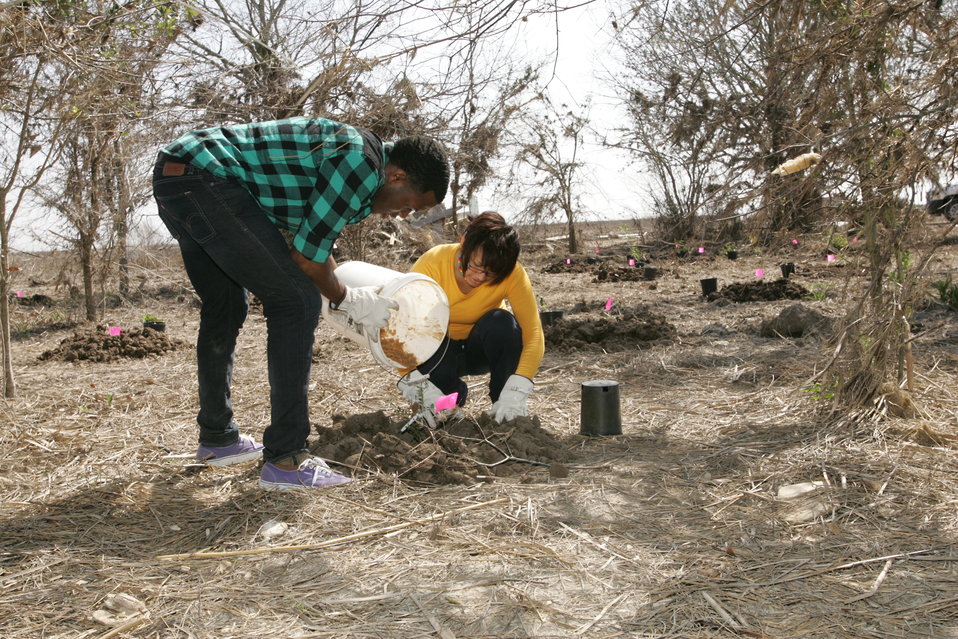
A little TLC to help the tree grow.

Volunteers help to plant trees at Anahuac National Wildlife Refuge, after hurricane Ike.